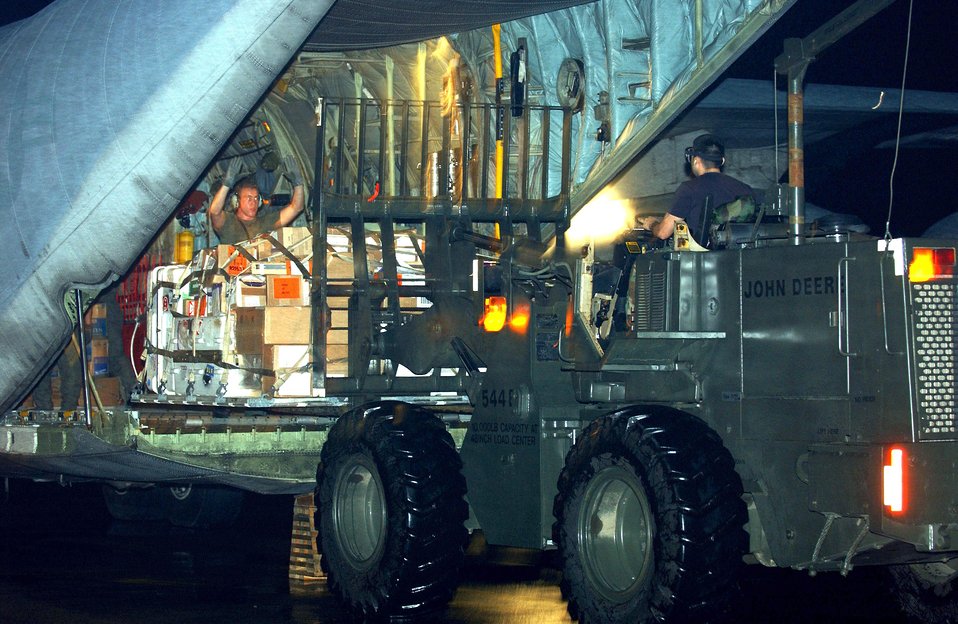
Philippine humanitarian relief

CLARK AIR BASE, Philippines (AFPN) -- A C-130 Hercules crewmember unloads humanitarian supplies Feb. 19. More than 2,000 U.S. and Philippine servicemembers are working together to assist in the humanitarian relief efforts for victims of the Feb. 17 landslide in the village of Guinsaugon on the island of Leyte, Philippines.